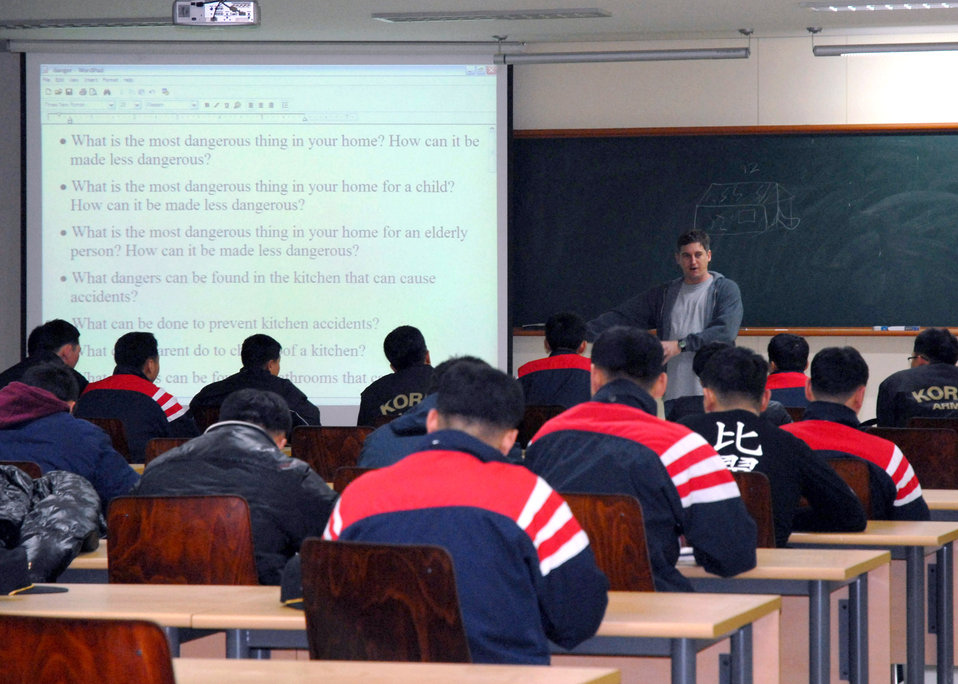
Kunsan Airmen teach English to South Korean cadets

Tech. Sgt. Stephen Peterson teaches South Korean army cadets English Jan. 31at Kunsan Air Base, South Korea. Numerous Airmen from the 5/6 group volunteer to teach assist South Korean army cadets English. Sergeant Peterson is the 8th Communication Squadron assistant NCO in charge of radar maintenance.